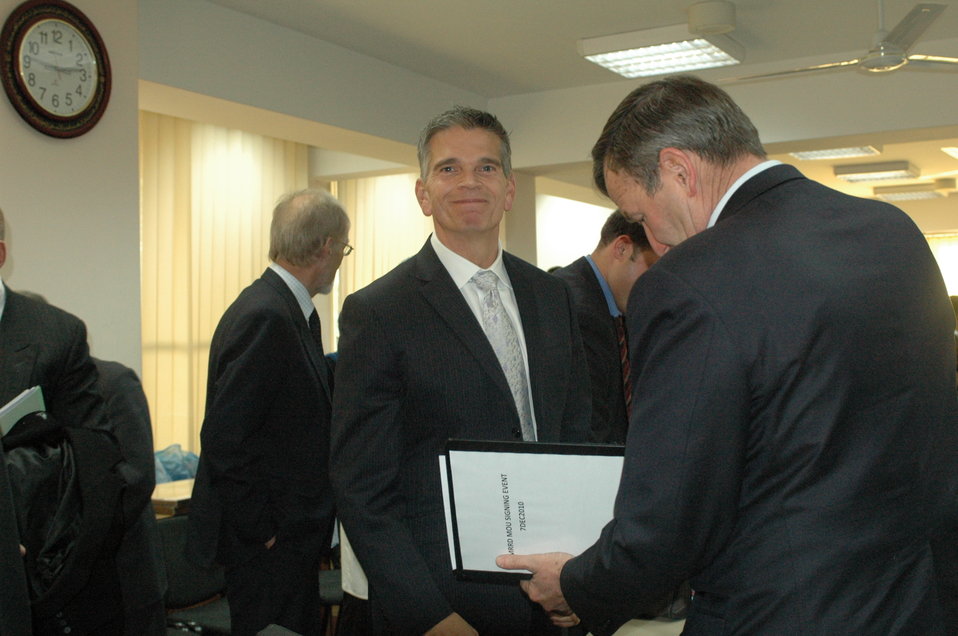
Community Based Stabilization Grants Ceremony, December 7, 2010